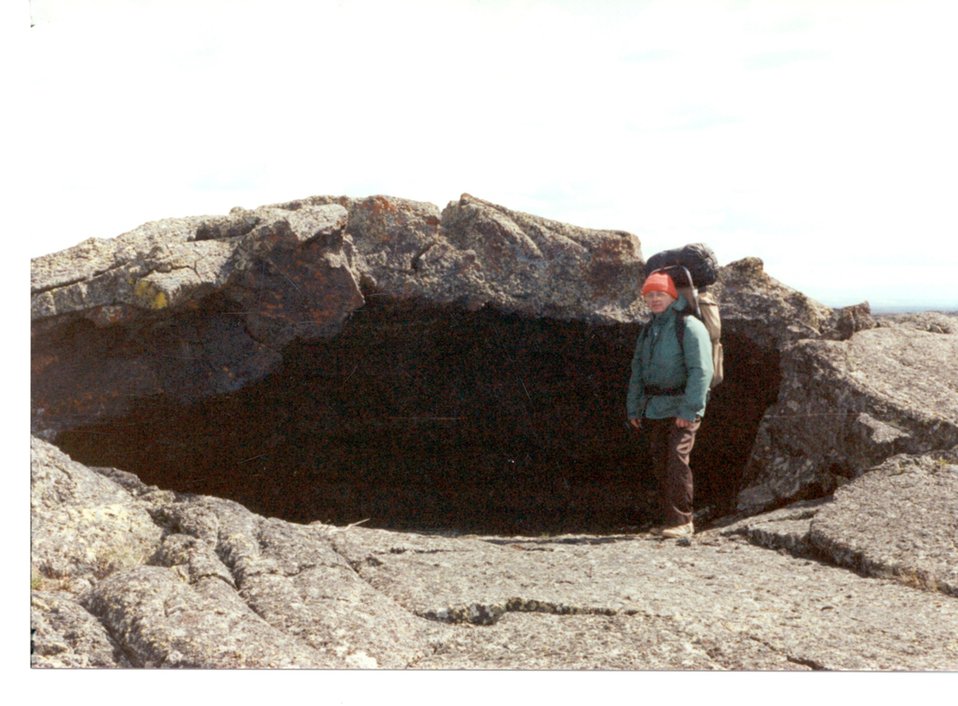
Blister Cave near Pillar Butte Craters of the Moon Shoshone Field Office USRD Upper Snake River District